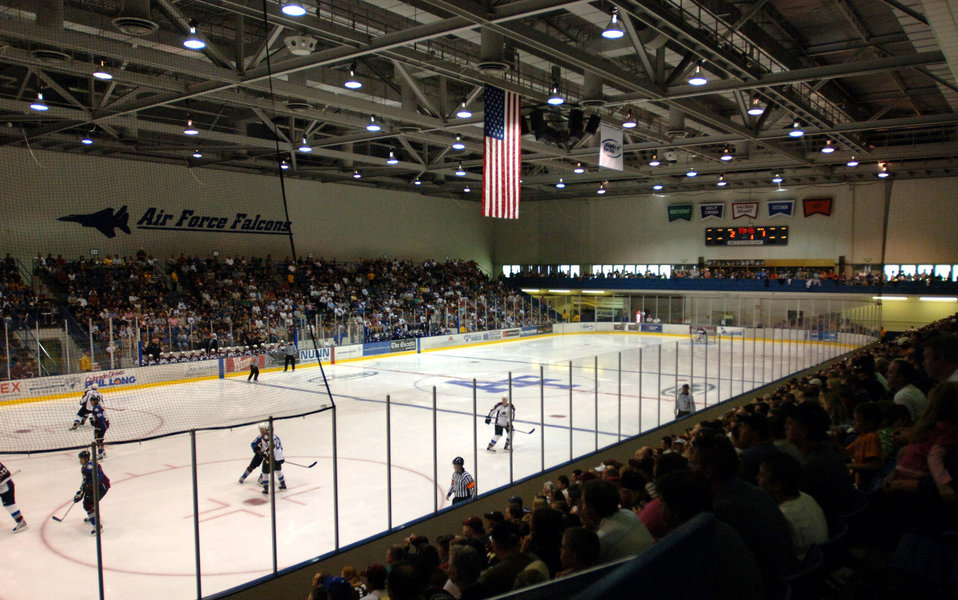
Avalanche breaks the ice at Academy

The standing-room-only crowd of 3,031 watch the National Hockey League's Colorado Avalanche at the 8th annual Burgundy and White intra-squad scrimmage at the Cadet Ice Arena Sept. 16 at the U.S. Air Force Academy in Colorado Springs, Colo. It was the first time an NHL team ever played at the Academy.